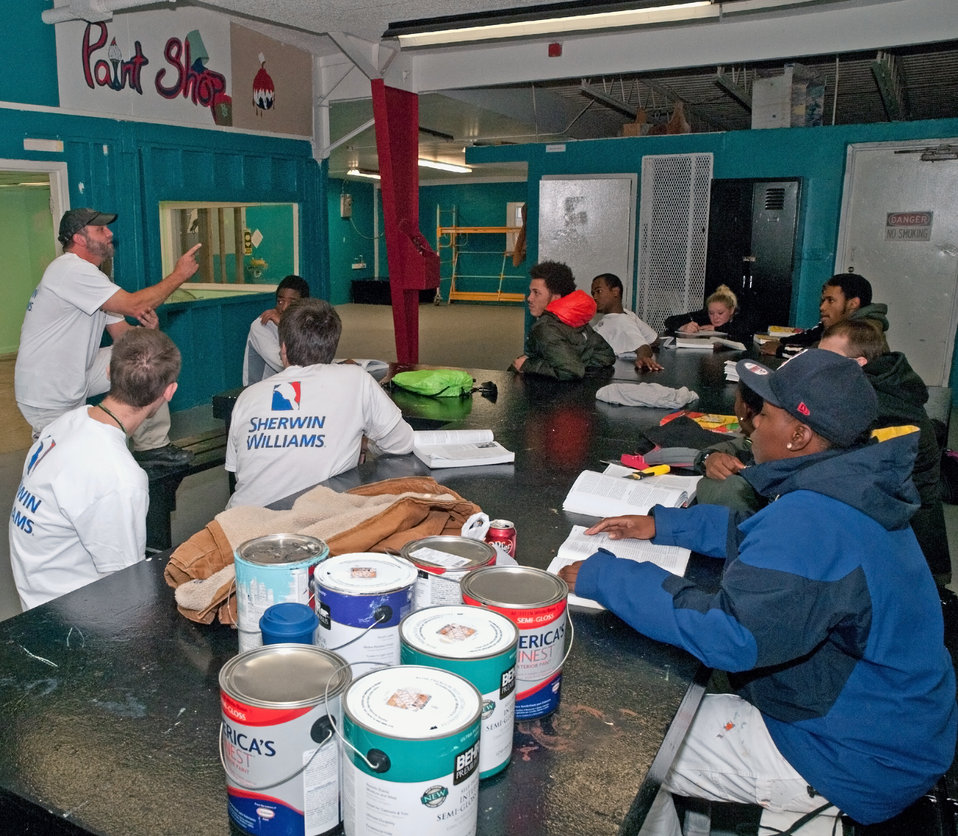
Painting instructor Dave Simons in front of his students at the Job Civilian Conservation Corp Center (JCCCC) in Harpers Ferry, WV on Nov. 8, 2012. The U.S. Forest Service manages 28 Job Corps Civilian Conservation Centers.